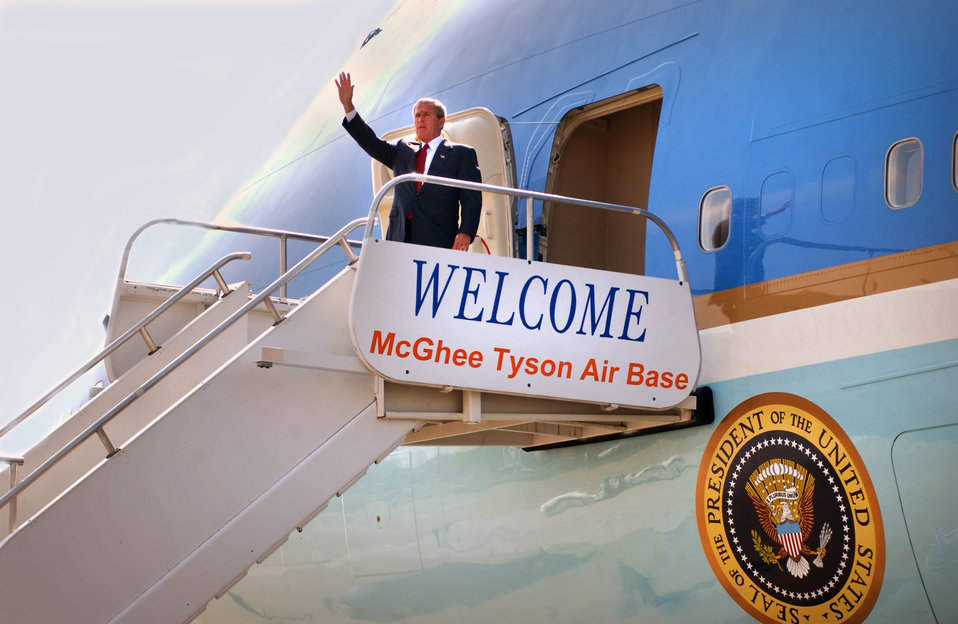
President George W. Bush at McGhee Tyson Air Port Knoxville

04-164-30 DOE photo by Lynn Freeny

President George W. Bush at McGhee Tyson Air Port Knoxville Tennessee 7-12-2004